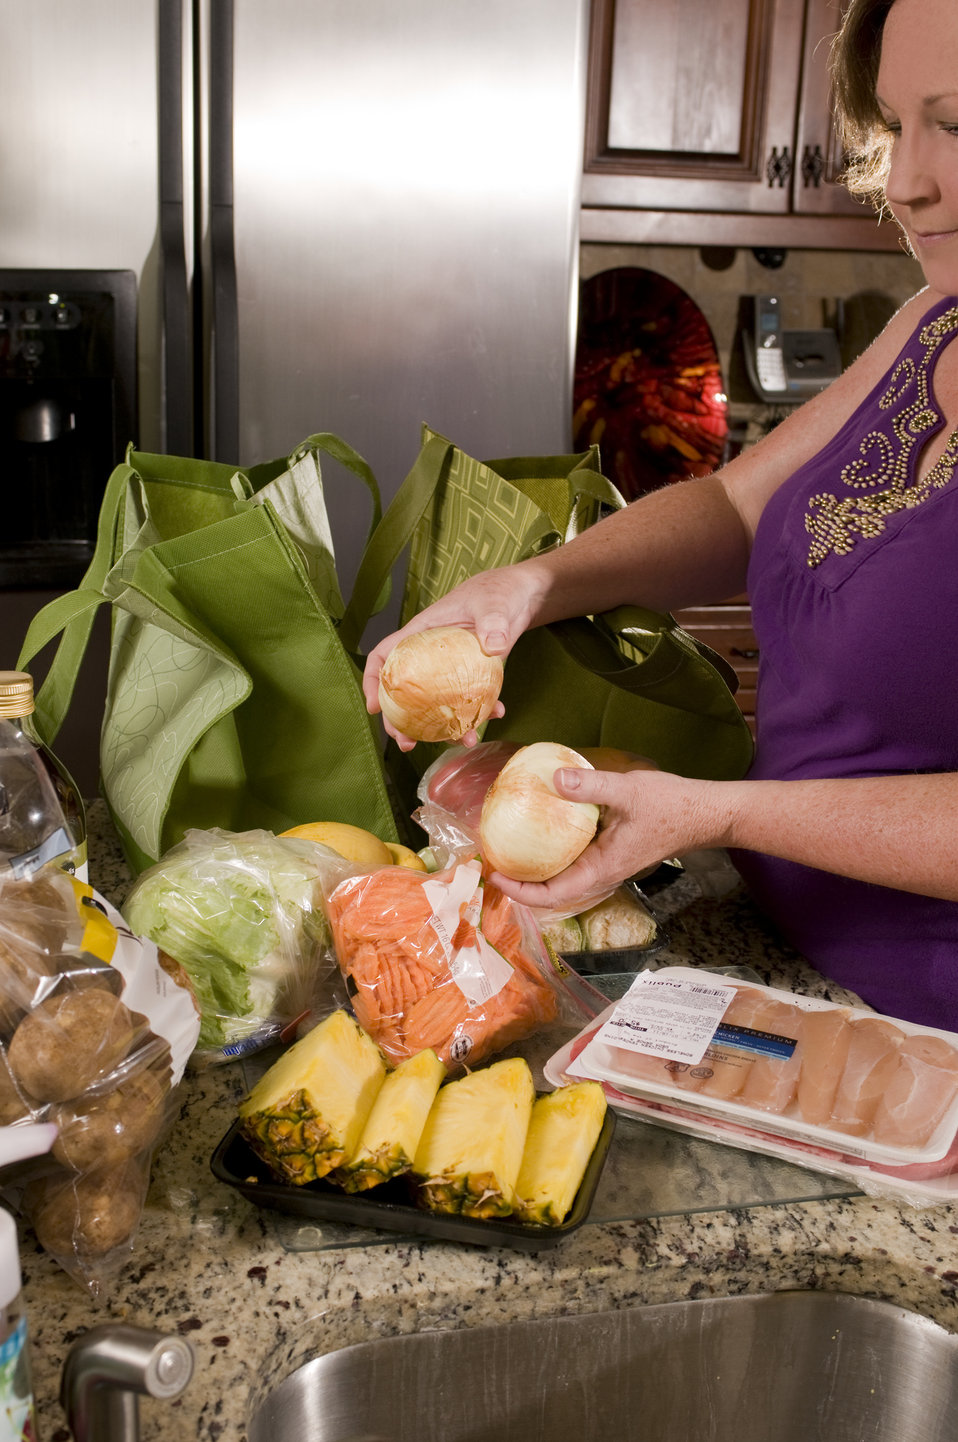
Holding two sweet onions, the woman pictured in this photograph was in the process of sorting through her cache of newly-purchased groceries, among which included a bag of baking potatoes, pre-sliced carrots, a package of deboned chicken breast filets atop a package of pork cutlets, a head of iceberg lettuce, some fresh-sliced pineapple, ears of yellow corn, and a bottle of olive oil. Note the reusable green-patterned grocery bags, which need to be washed regularly, in order to keep them sanitary.